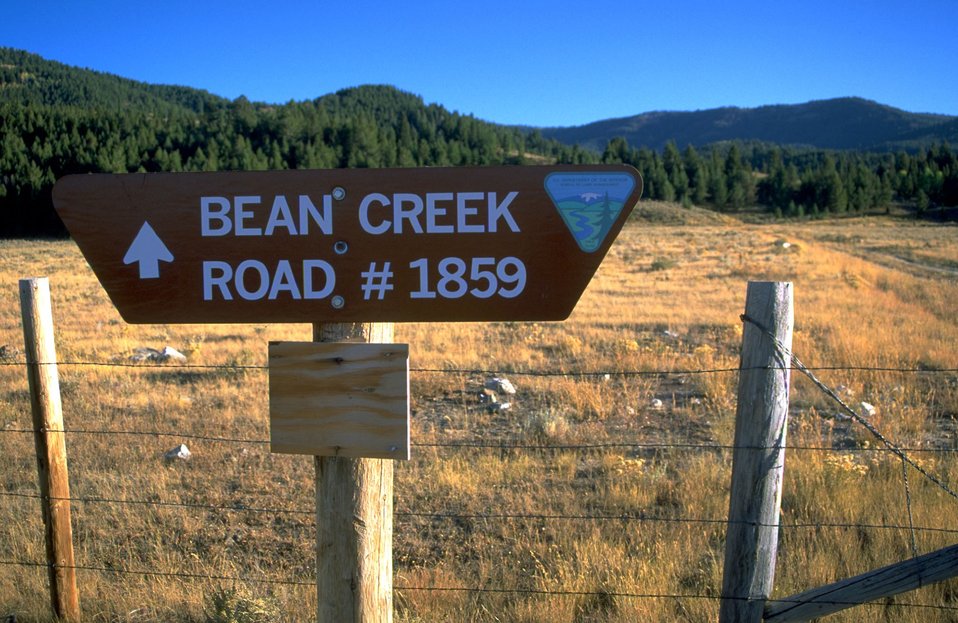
Bean Creek Road sign closeup